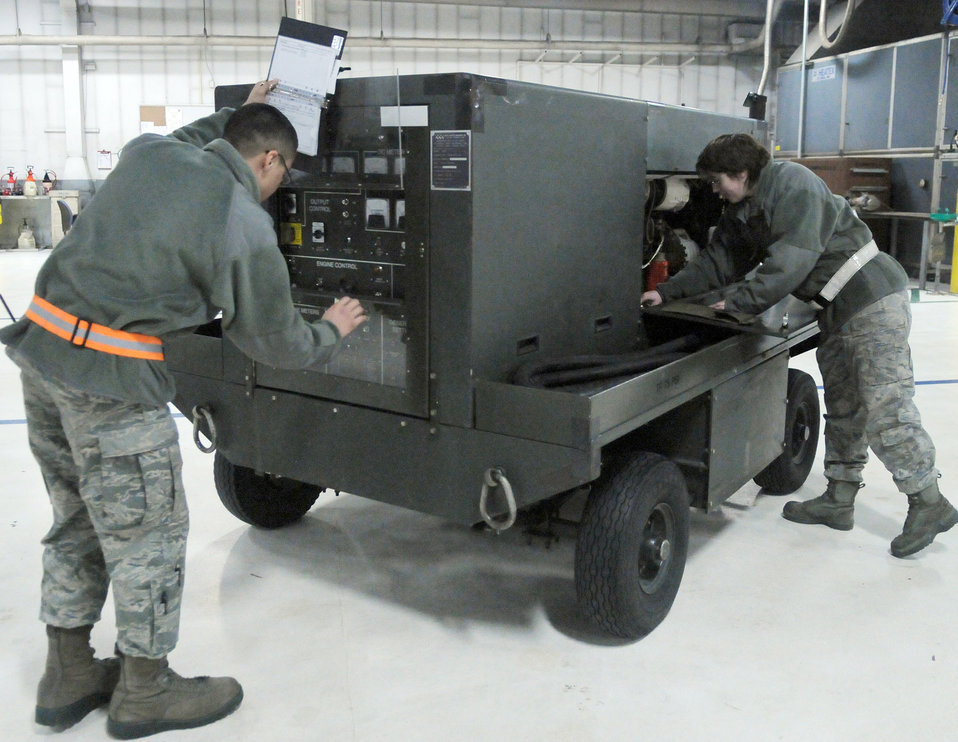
Eielson AFB AGE

Airmen 1st Class Angel Marquez and Sheldy Forton perform a service inspection on an essex power generator Feb. 16, 2011, at Eielson Air Force Base, Alaska. Airmen periodicaly inspect equipment to ensure it is ready for maintainers to use during aircraft operations. The Airmen are assigned to the 354th Maintenance Squadron as aerospace ground equipment maintainers.